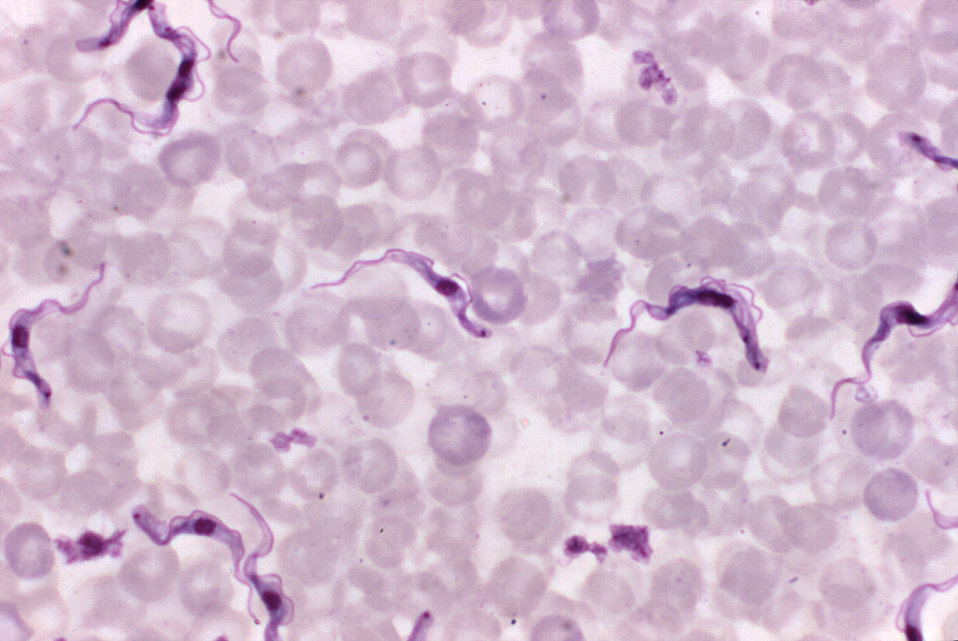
Magnified 1000X, this Giemsa-stained light photomicrograph revealed the presence of Trypanosoma brucei parasites, which were found in a thin film blood smear. Humans are the main reservoir for Trypanosoma brucei gambiense, but this species can also be found in animals. Wild game animals are the main reservoir of T. b. rhodesiense.Geographic Distribution: